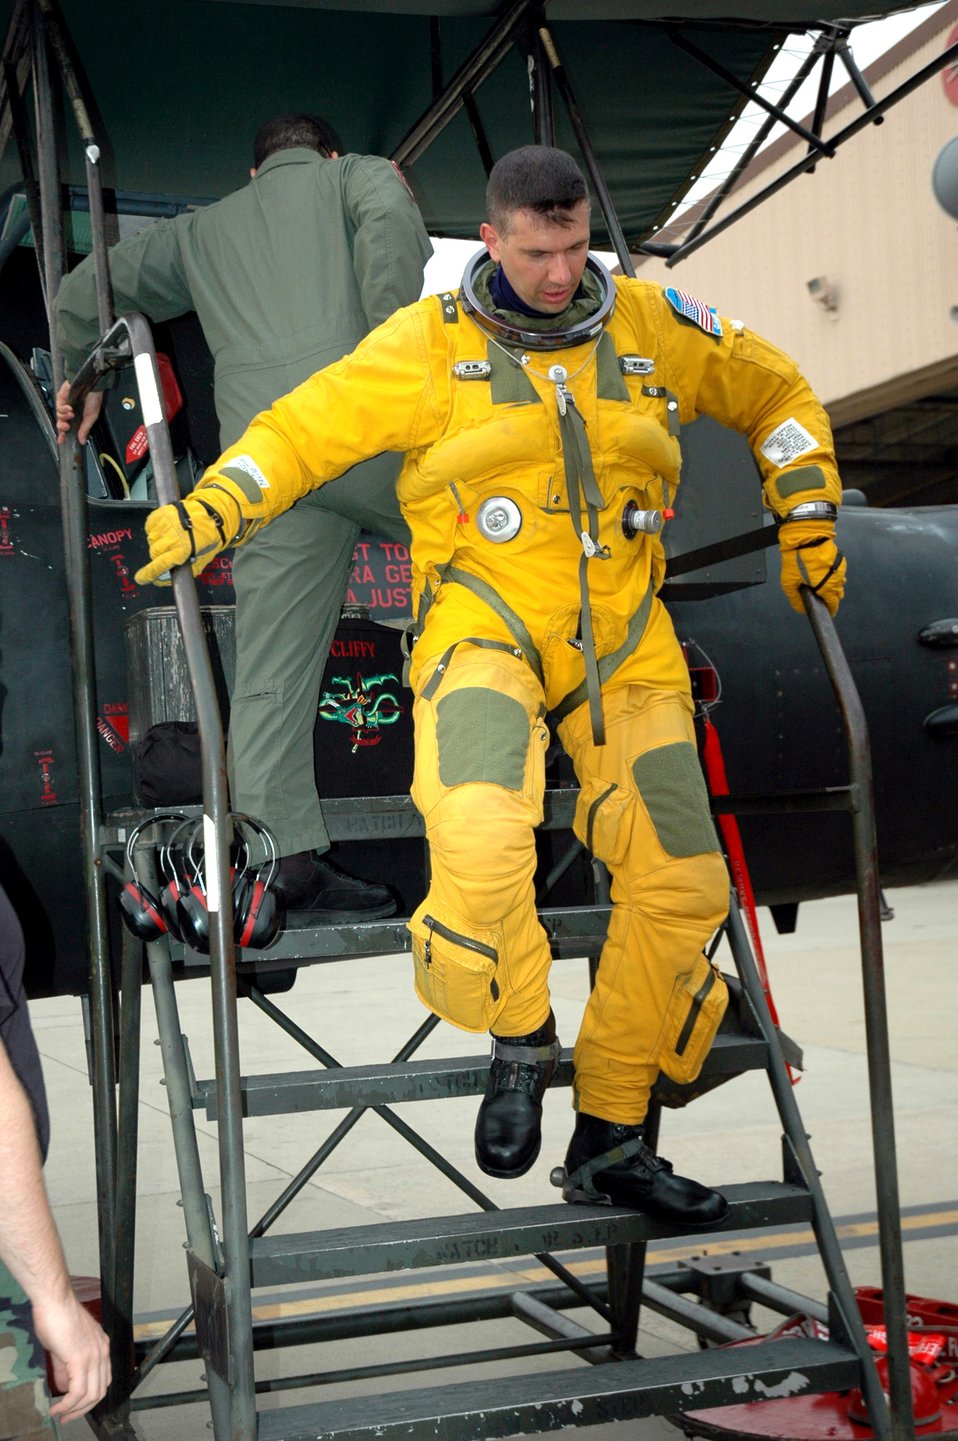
U-2s boast new, improved cockpit

Maj. Michael Clavenna returns to Osan Air Force Base, South Korea, from the last operational reconnaissance flight in the U-2S Dragon Lady, Block 10, aircraft. Major Clavenna is wearing the full pressure suit required for wear by U-2 pilots because of their high-altitude reconnaissance missions. Major Clavenna is the 5th Reconnaissance Squadron assistant director of operations.